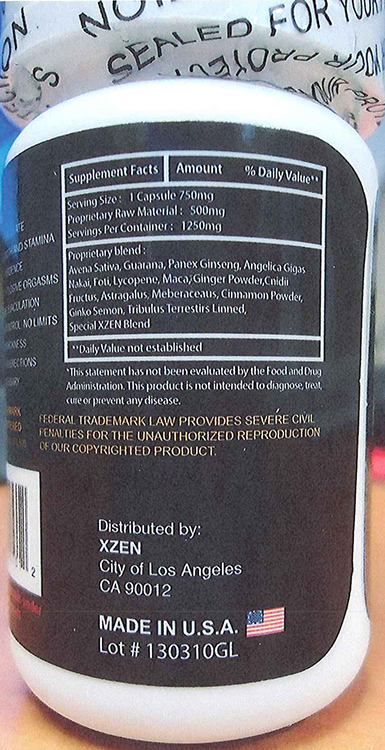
RECALLED – Dietary Supplement

April 1, 2014 – Product Recall – Nova Products, Inc. Issues Voluntary Nationwide Recall of Dietary Supplements with Undeclared Active Pharmaceutical Ingredients.